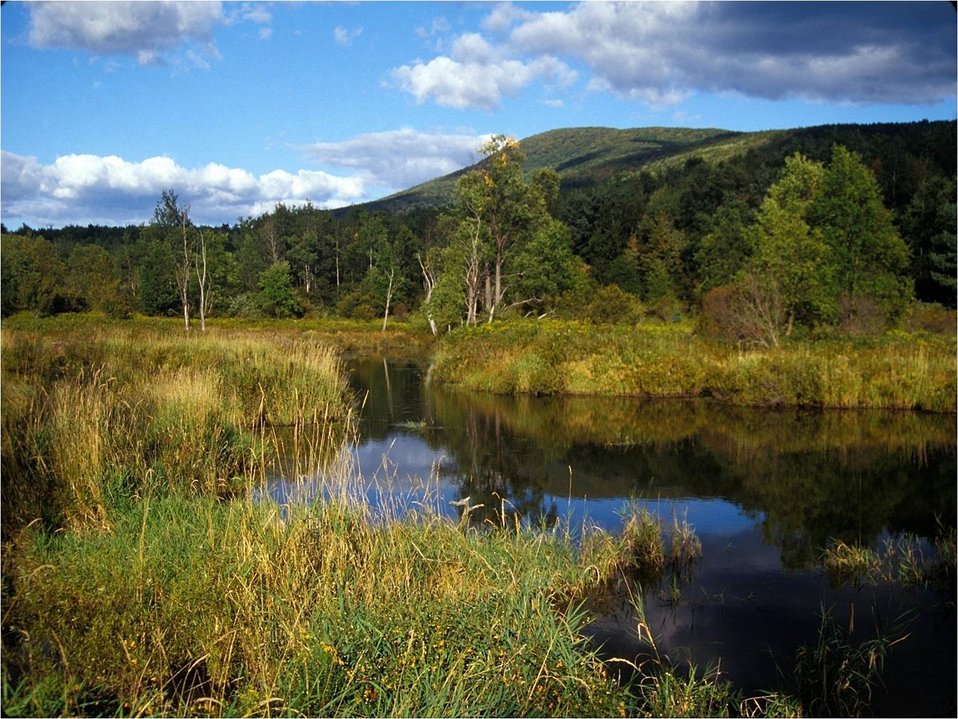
Catskills Mountains and freshwater marsh, NY